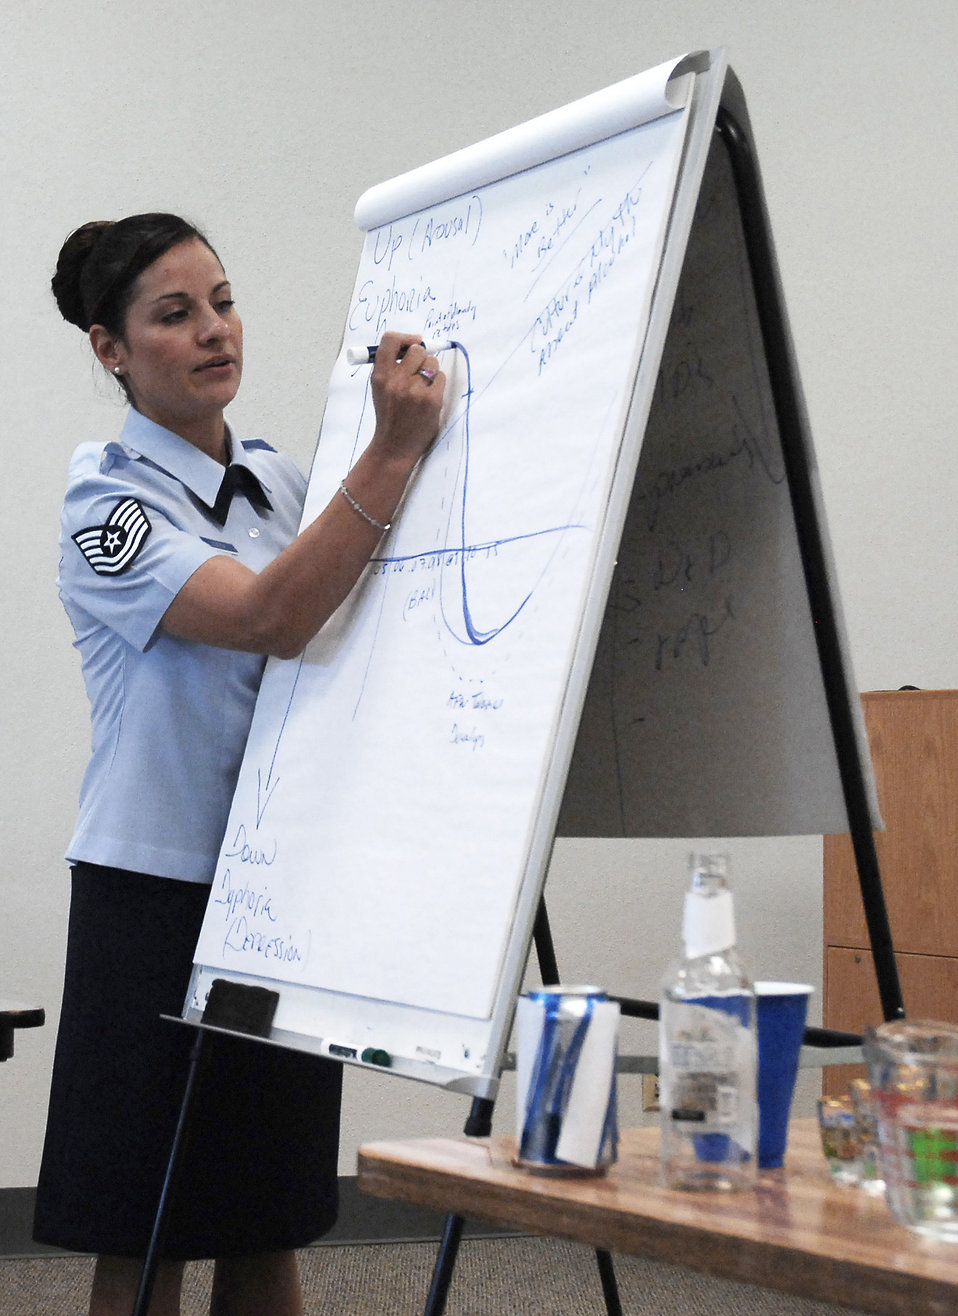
12 Outstanding Airmen of the Year named

Tech. Sgt. Marisol Lozada is the noncommissioned officer in charge of the 27th Special Operations Medical Group's mental health clinic at Cannon Air Force Base, N.M. Called the